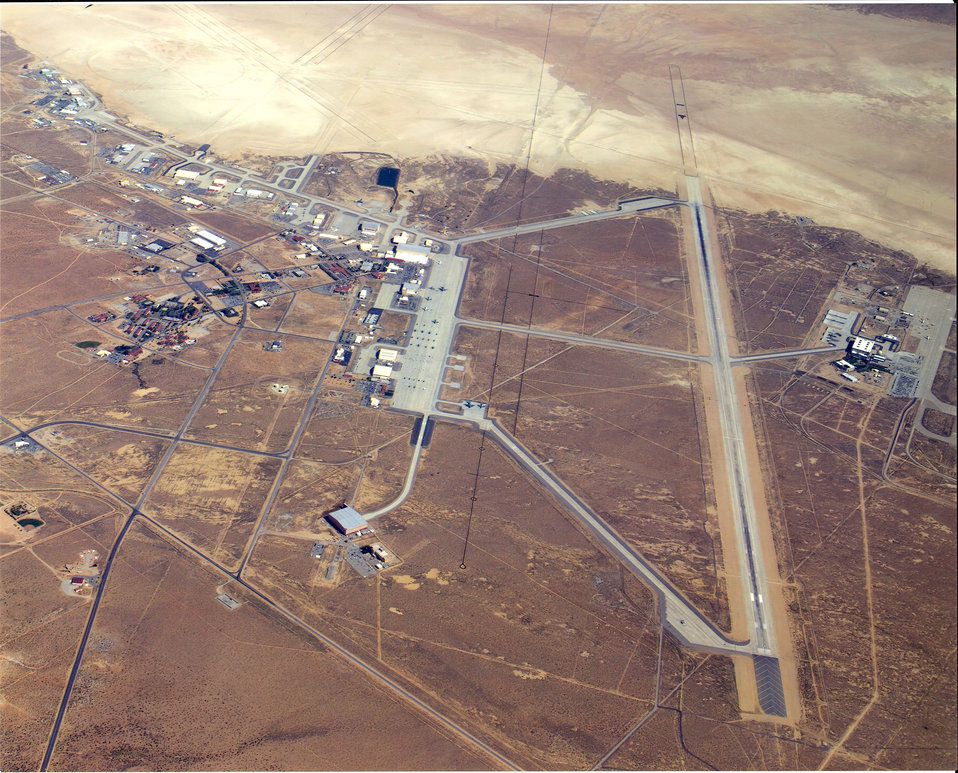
Edwards AFB, Calif. overview

A pilot's view of Edwards Air Force Base, Calif. -- main base area -- located on the edge of Rogers Dry Lake.